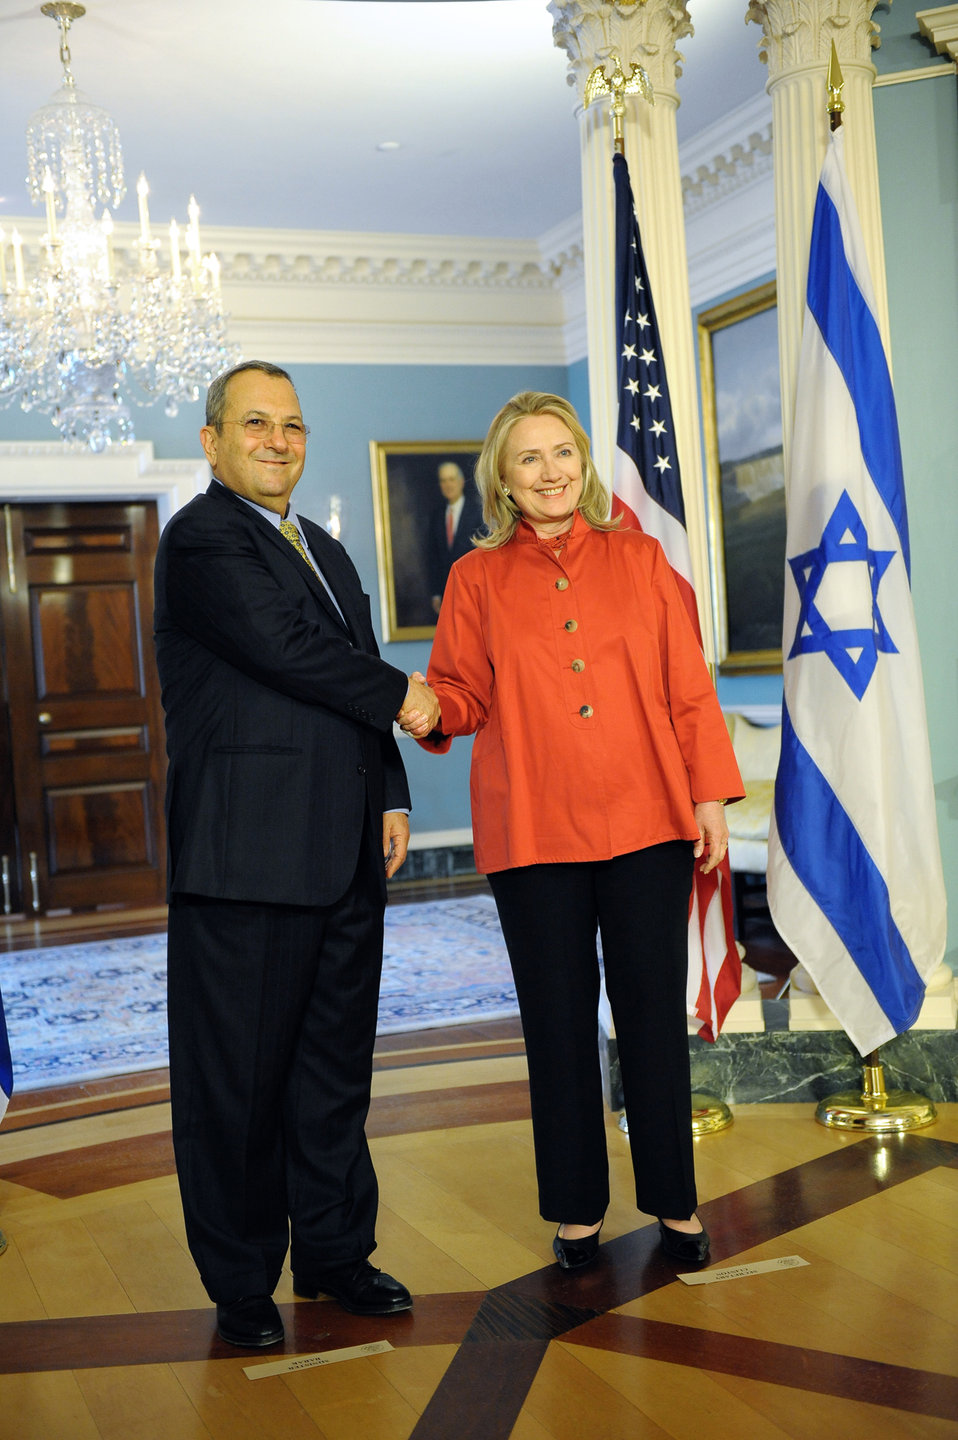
Secretary Clinton Meets With Israeli Defense Minister Barak

U.S. Secretary of State Hillary Rodham Clinton meets with Israeli Defense Minister Ehud Barak at the U.S. Department of State in Washington, D.C., on May 17, 2012.